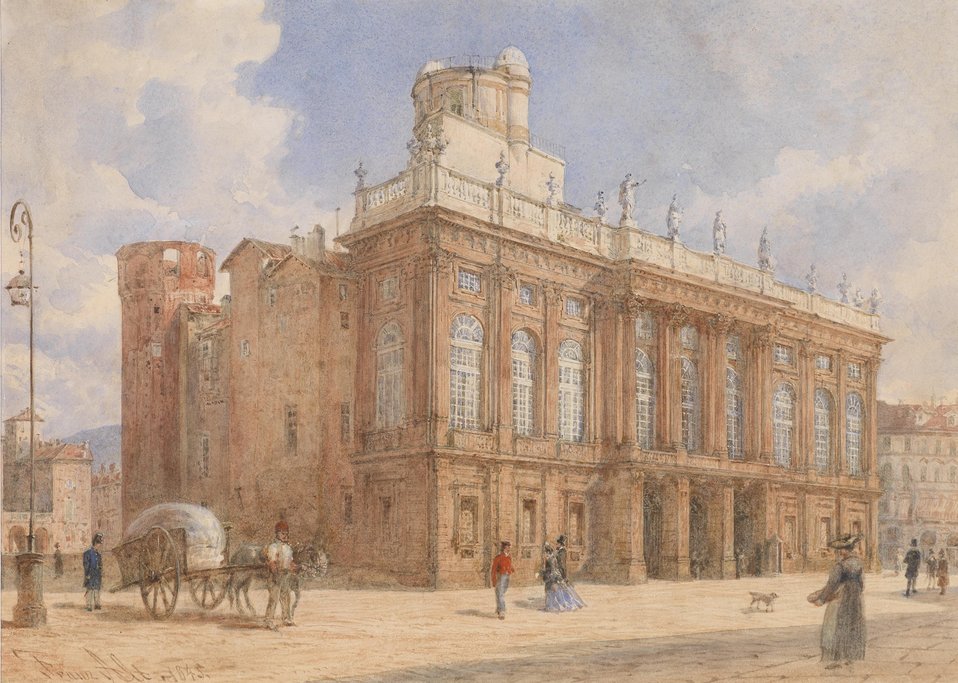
Franz Alt Castello Reale in Turin 1845